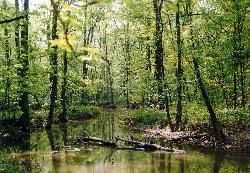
MS - Sam D. Hamilton Noxubee National Wildlife Refuge